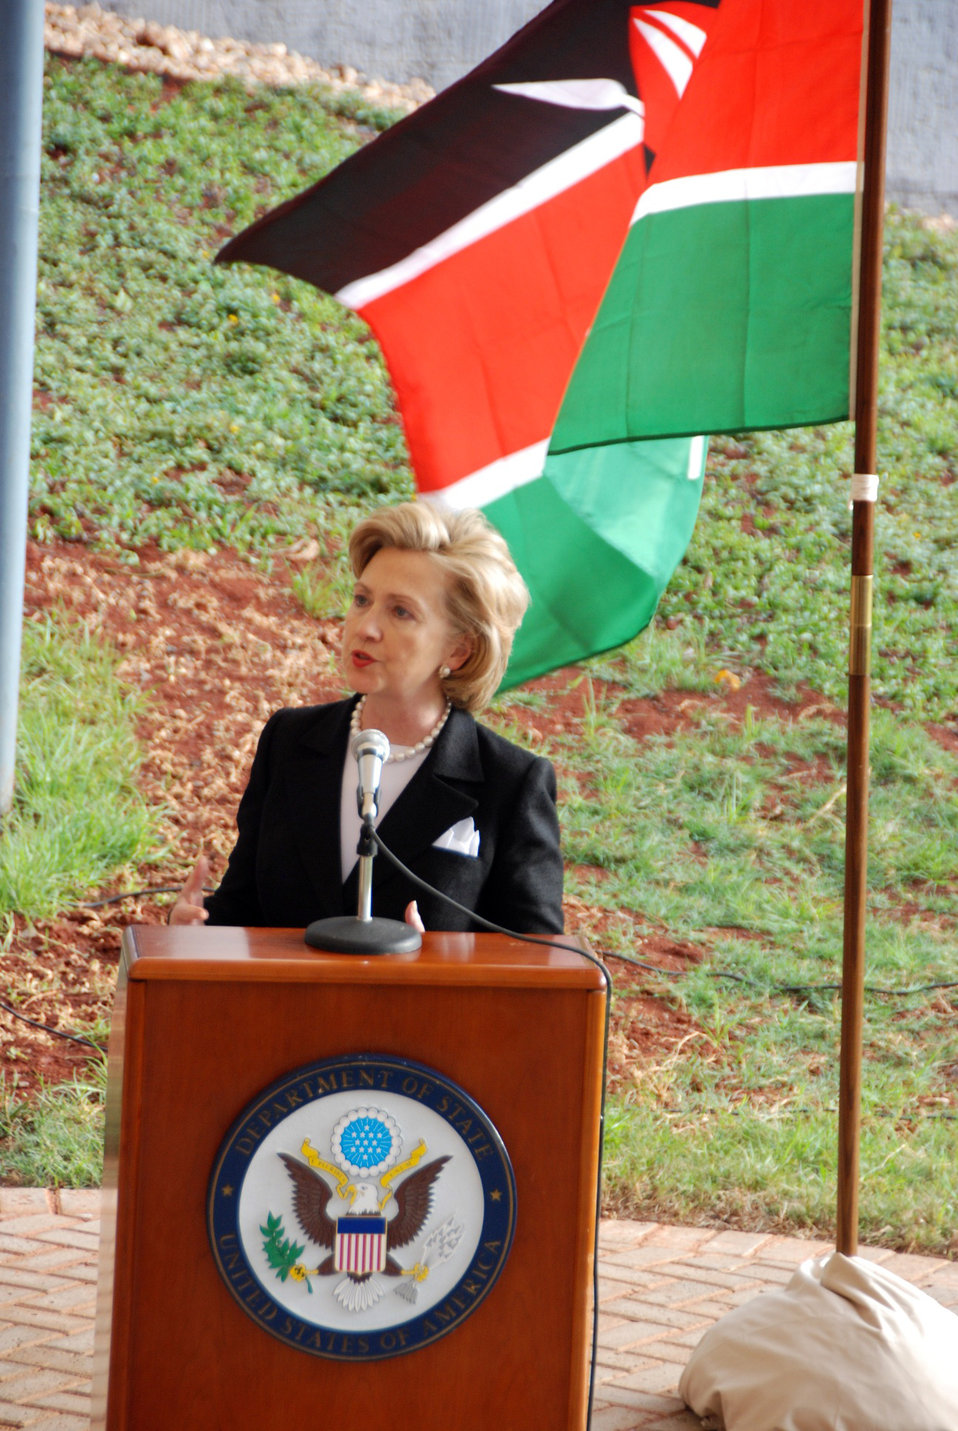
Secretary Clinton Addresses U.S. Embassy Staff in Kenya

U.S. Secretary of State Hillary Rodham Clinton addresses U.S. Embassy employees in Nairobi, Kenya August 6, 2009.